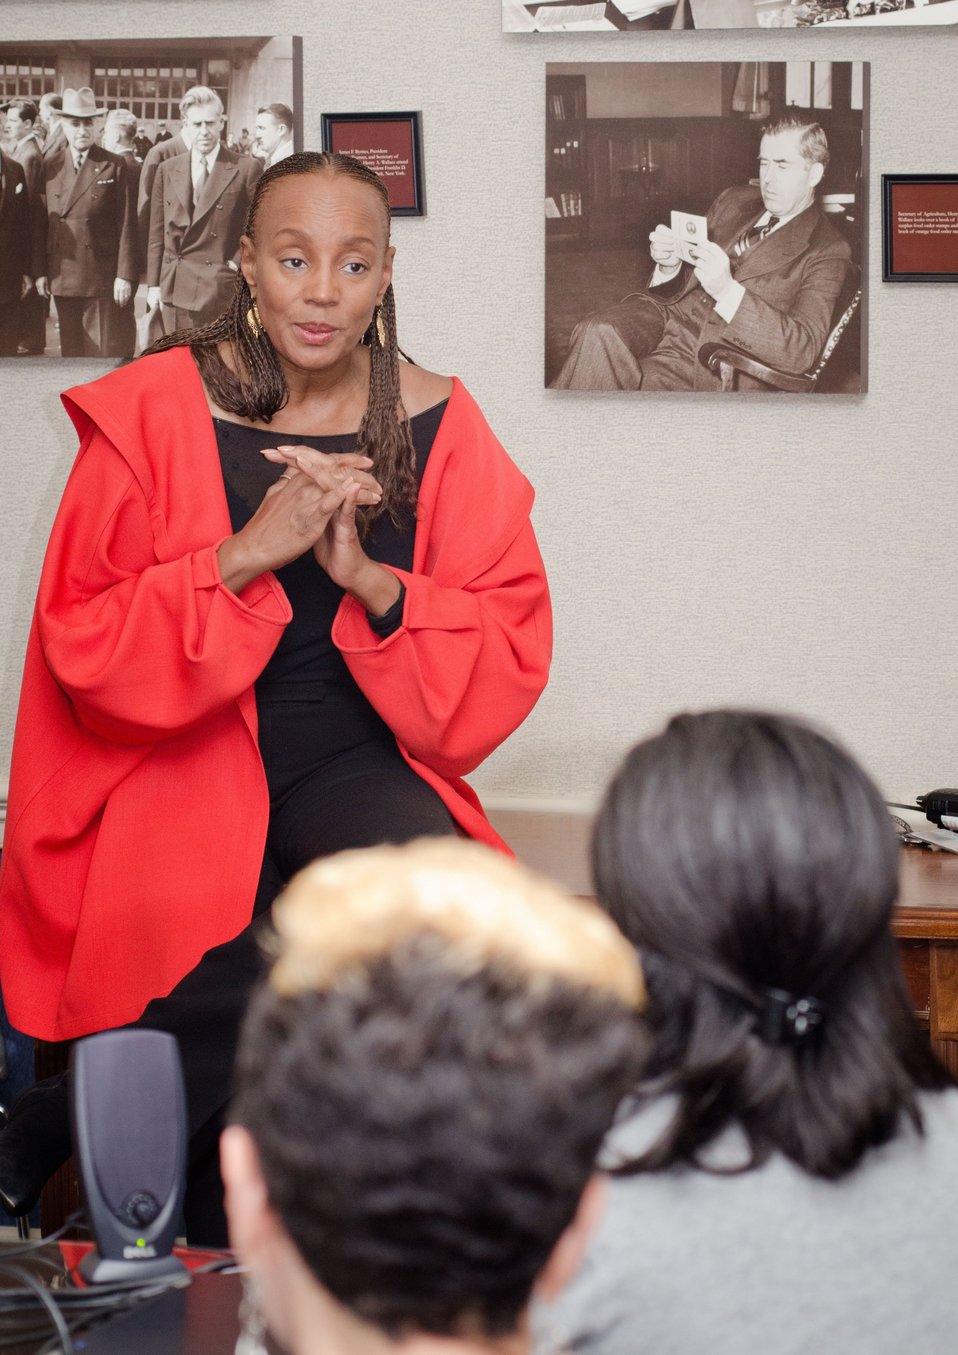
National CARES Mentoring Movement founder and Editor-in-Chief Emeritus, Essence magazine, Susan Taylor (red coat), met for a cross-departmental discussion with Department of Agriculture and Department of Energy personnel in the Whitten Building, U.S. Department of Agriculture, in Washington, D.C., on Tuesday, February 28, 2012. This not-for-profit organization is dedicated to recruiting and connecting mentors with local youth and mentoring organizations to help guide under-resourced children to academic and social success across the country. This discussion provided a continuation of the White House Policy in Action conference that took place in November 2011. The focus of the discussion was about how existing federal programs and administration priorities can be leveraged with her organization, especially as it relates to science, technology, engineering and mathematics (STEM) literacy, education and rural youth.